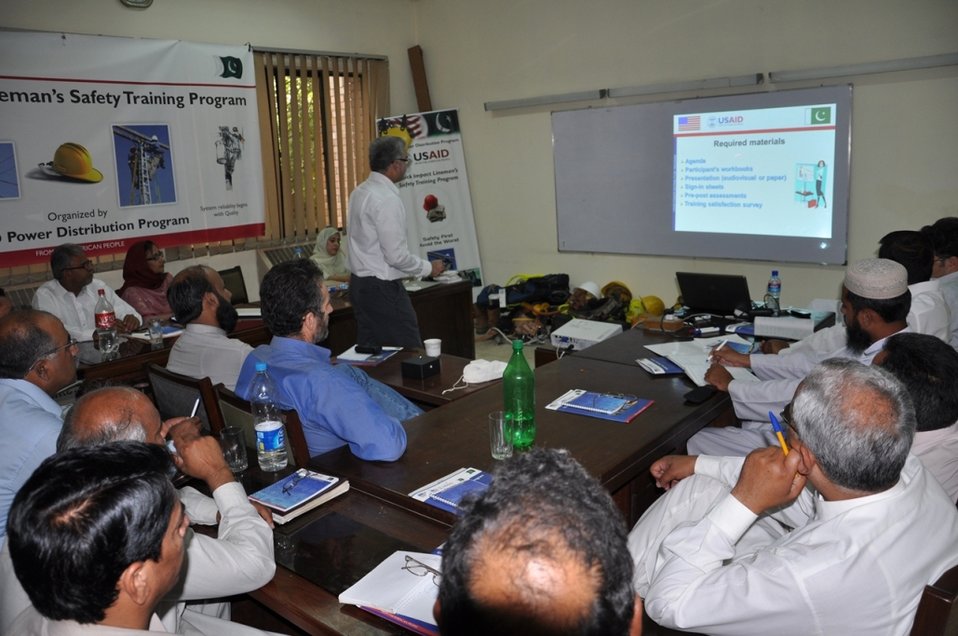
Quick Impact Safety Training Program at Wapda Staff College

Islamabad, May 21, 2012: The United States Government through the United States Agency for International Development (USAID) “Quick Impact Lineman Training Program” will help in save thousands of linemen in Pakistan. At the concluding session of today’s training program held at the WAPDA Staff College, the deputy chief of party of USAID’s Power Distribution Program officially handed over linemen safety tools to distribution companies including the Islamabad Electric Supply Company (IESCO), Multan Electric Power Company (MEPCO), and Hyderabad Electric Supply Company (HESCO). USAID has provided safety trainings to over 415 linemen and will provide training to thousands more in the coming months.